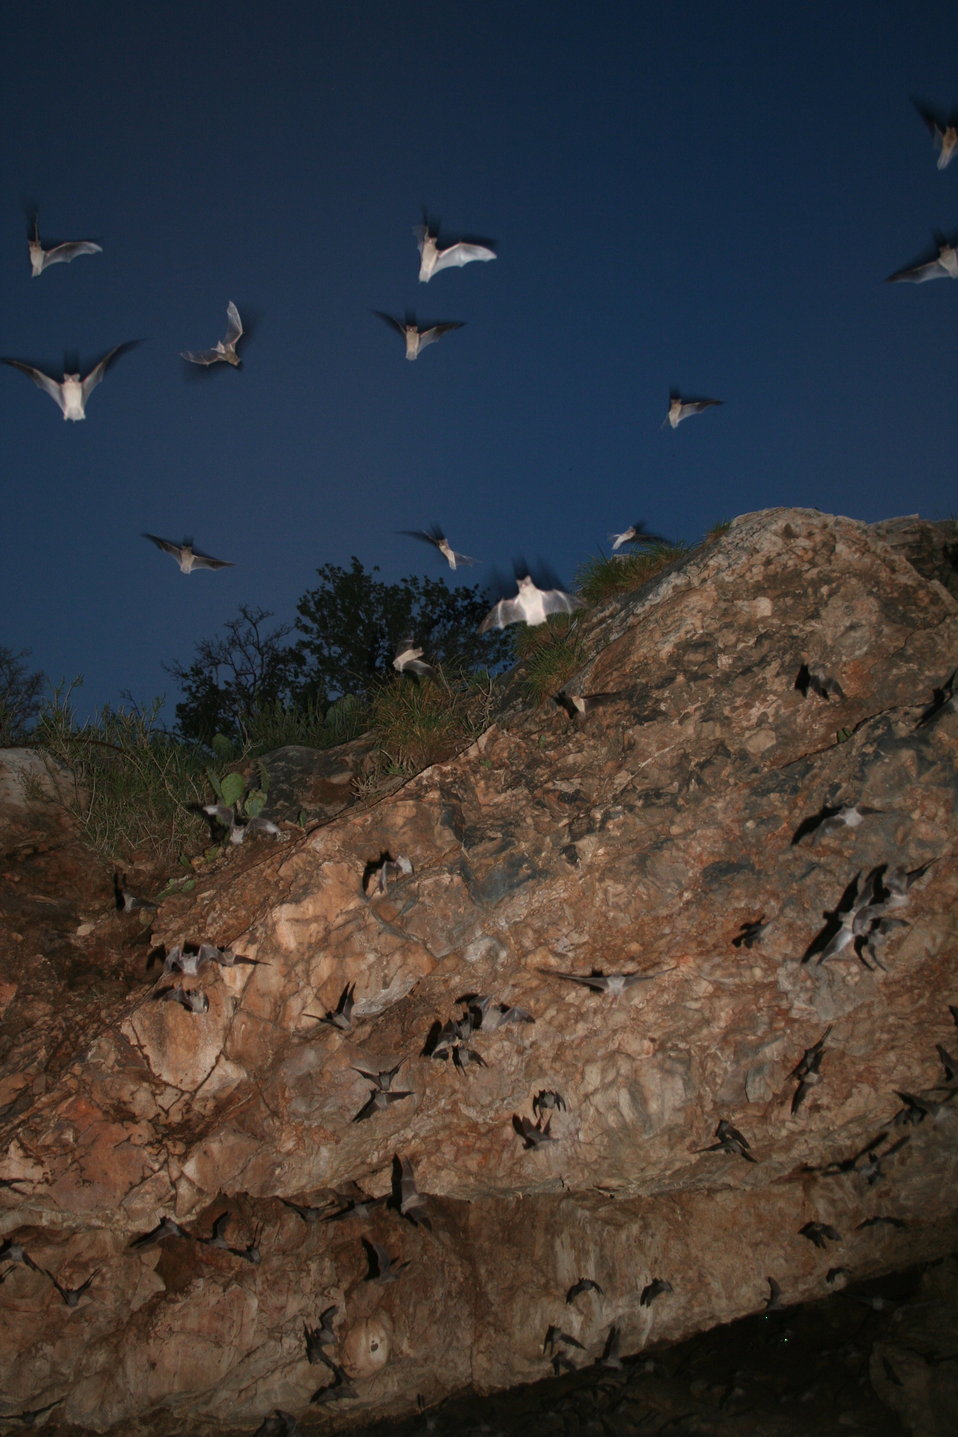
Bats emerging from Davis Cave